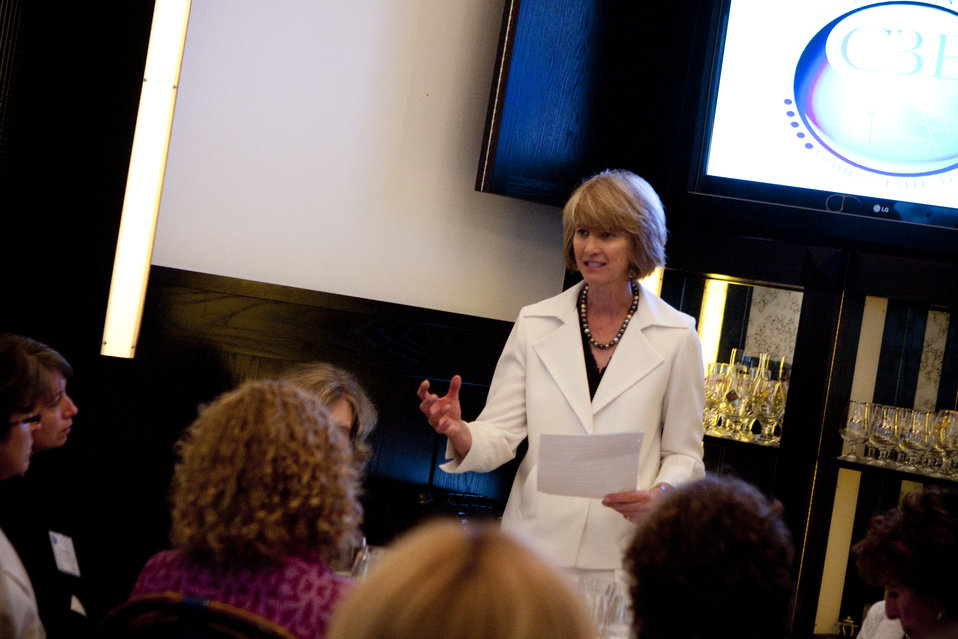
WomenandEnergy 53